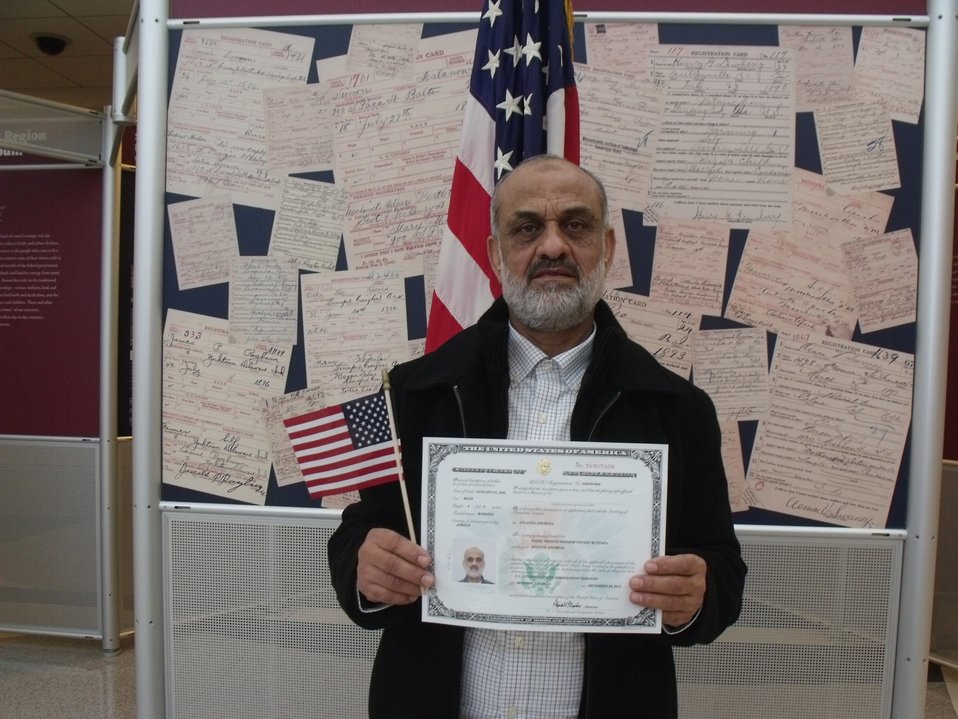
New Citizens